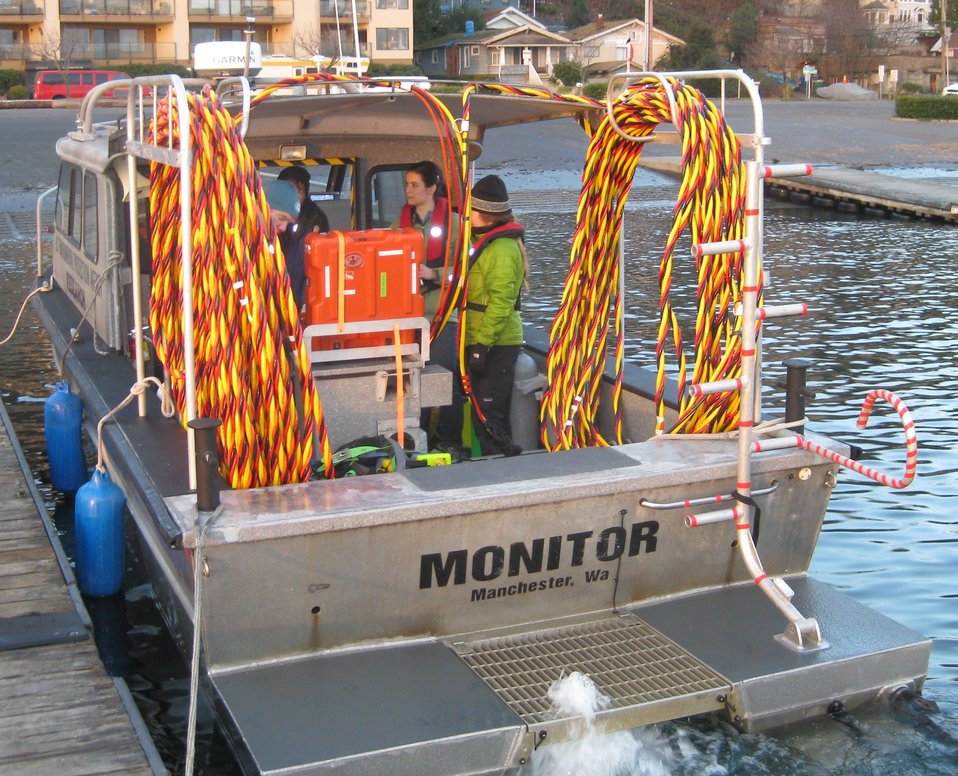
January 15, 2013 - Lower Duwamish River, Sampler Recovery Trip

EPA divers prepare the surface supplied diving system on a cold Seattle morning. Surface supply allows longer working time underwater, as well as plenty of time to decontaminate the diver at the end of the dive.

The Region 10 dive unit was asked to help plan and execute the deployment and retrieval of passive sampling devices in the Lower Duwamish River. These devices were collecting bottom data since November of 2012.

Passive samplers were collecting information about 'porewater' to help demonstrate whether these devices could be useful in determining the bioavailability of PCBs on the river bottom.

EPA defines 'porewater' as: 'the water occupying the spaces between sediment particles ... Contaminants in the interstitial water and in the solid phase are expected to be at thermodynamic equilibrium. This makes interstitial waters useful for assessing contaminant levels and associated toxicity.'

We also know that pore water can be related to fish tissue data, so sampling in this manner can be very useful in assessing a site cleanup. EPA divers have deployed a variety of passive samplers to support Superfund work. This technique has the capability of integrating data over a longer period of time--making it more likely that a contaminated groundwater plume discharging to a river like this one will be captured, where other techniques may only produce a snapshot.

Lower Duwamish Waterway Superfund Site

More about this sampling event

To find out more about EPA diving nationally, visit: www.facebook.com/EPAdivers